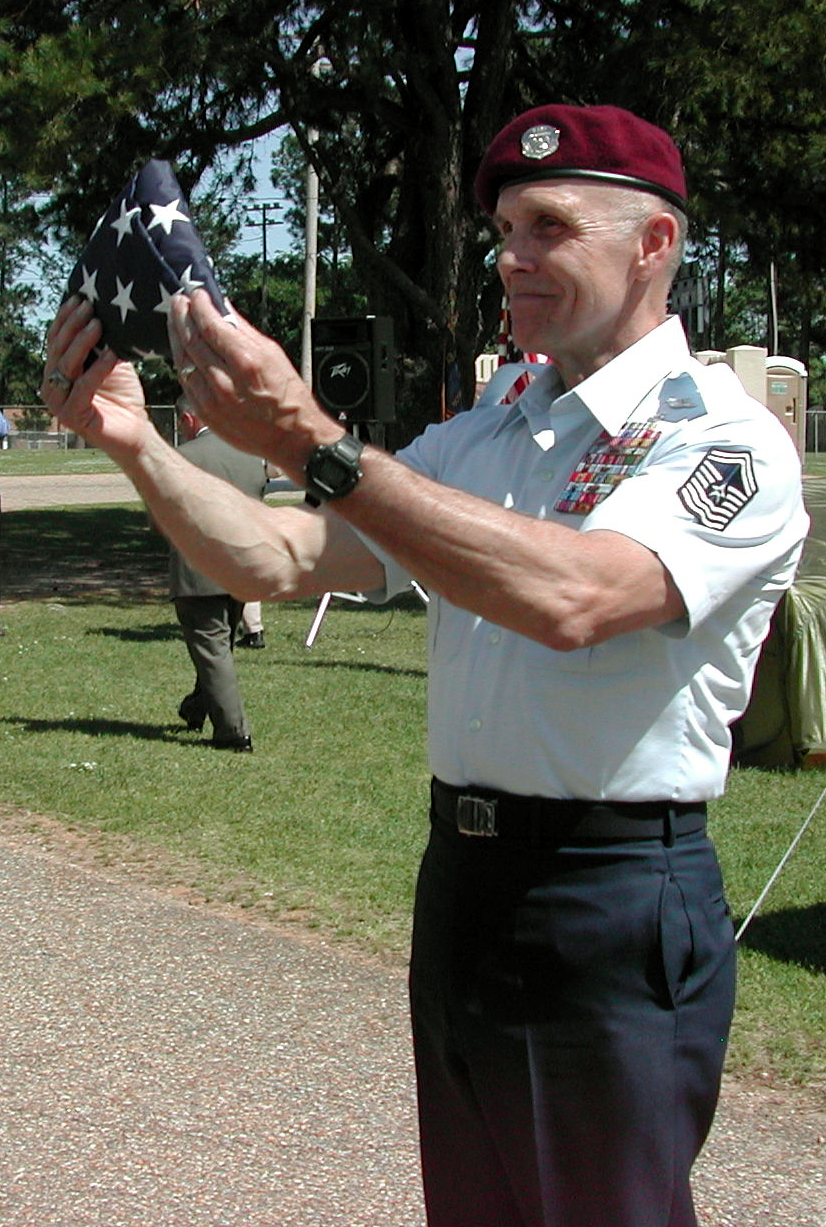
Special presentation

MAXWELL AIR FORCE BASE, Ala. -- Retired Chief Master Sgt. Wayne Fisk displays a flag presented to him by two pararescue Airmen who rappelled from a helicopter during a ceremony naming a park here in his honor April 28.